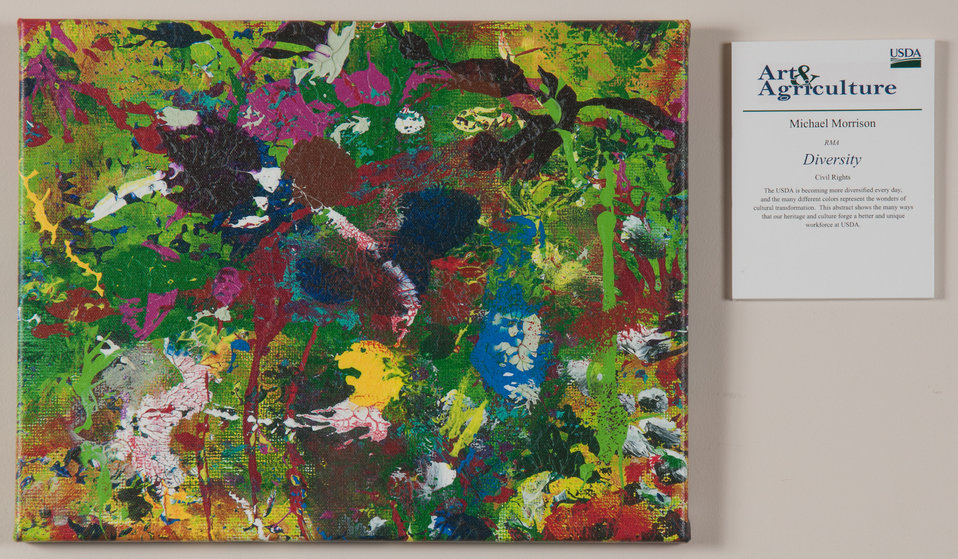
Online Viewer's Choice entries of the 2013 Art & Agriculture, Tuesday, July 9, 2013, in the South Building, Washington, D.C. Themes were expressed by employees from across the department and the contest was open to full-time and part-time USDA employees. Winning artwork will be displayed till the end of the year. U.S. Artistic expression is a creative outlet that is vital for an individual to grow and develop.